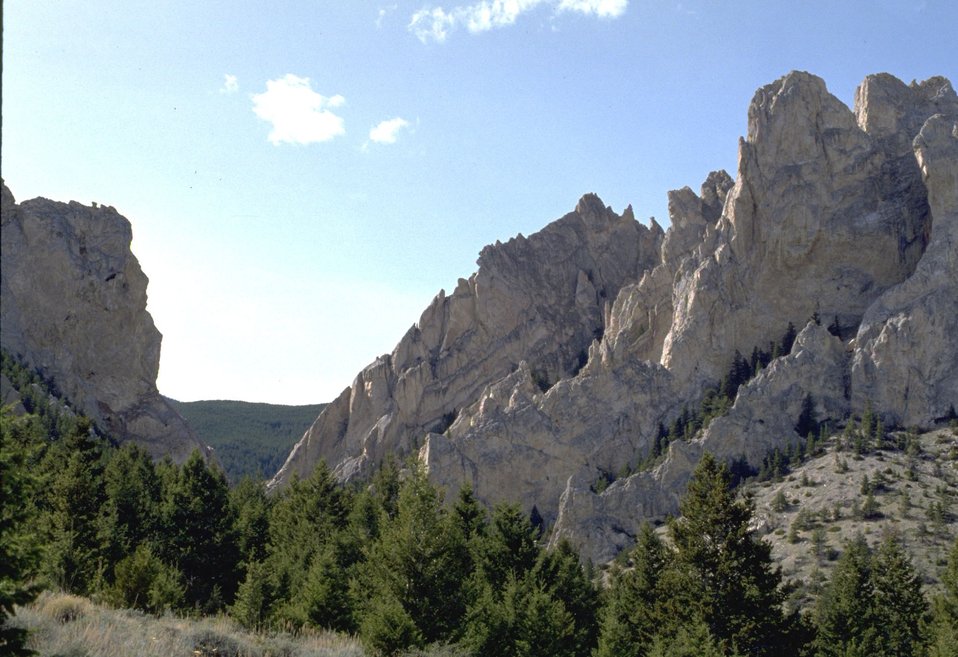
Meeteetse Spires